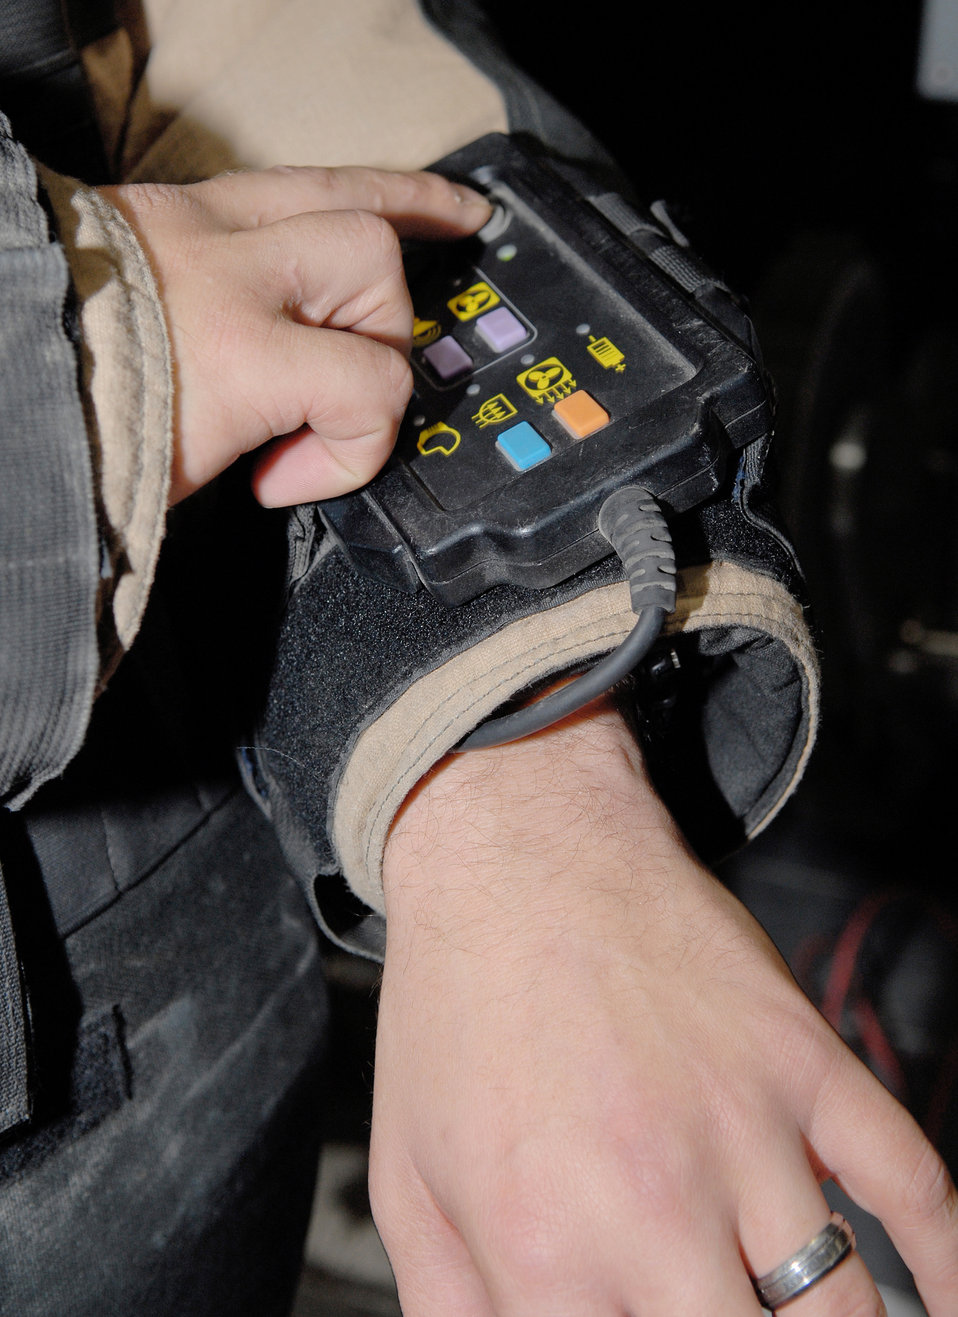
Air Force amputee returns to Southwest Asia, spends holidays in AOR

SOUTHWEST ASIA -- Tech. Sgt. Christopher Ramakka, flight chief from the 380th Expeditionary Civil Engineer Explosive Ordnance Flight, runs through an operations check on a protective-suit control panel in the EOD warehouse here Dec. 24. The Richland, Wash., native is serving his debut deployment after losing his lower left leg when he stepped on a mine in Afghanistan three years ago. He also lost the tips of two fingers and suffered further damage to his hands and right leg.